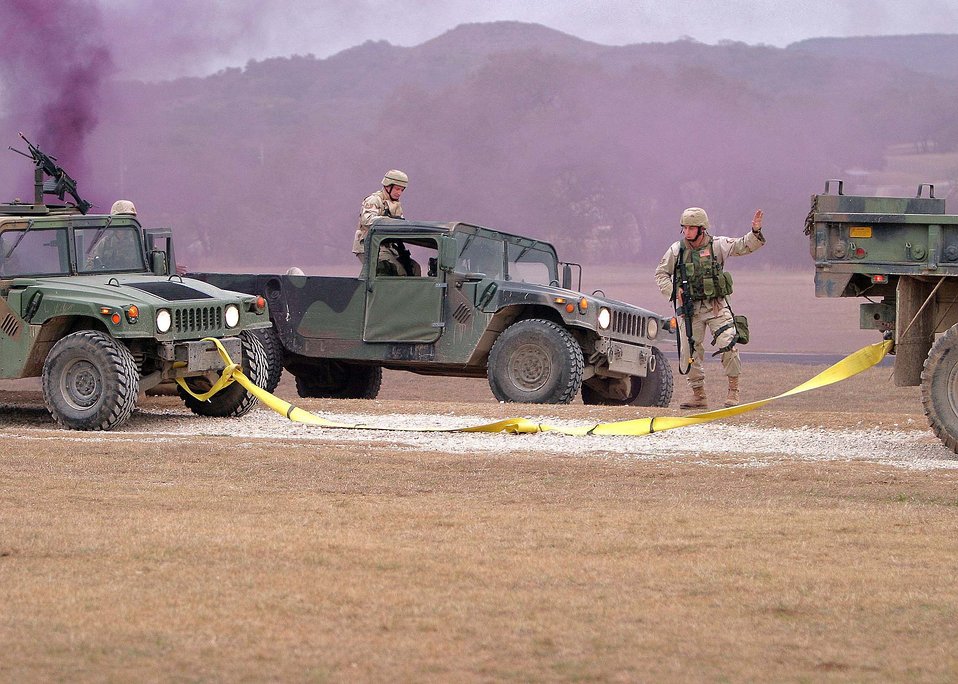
Airmen provide convoy security for Soldiers, Marines in Iraq

CAMP BULLIS, Texas -- During the Basic Combat Convoy Course here, Airmen train in the combat-type skills they will need during convoy operations in Iraq.